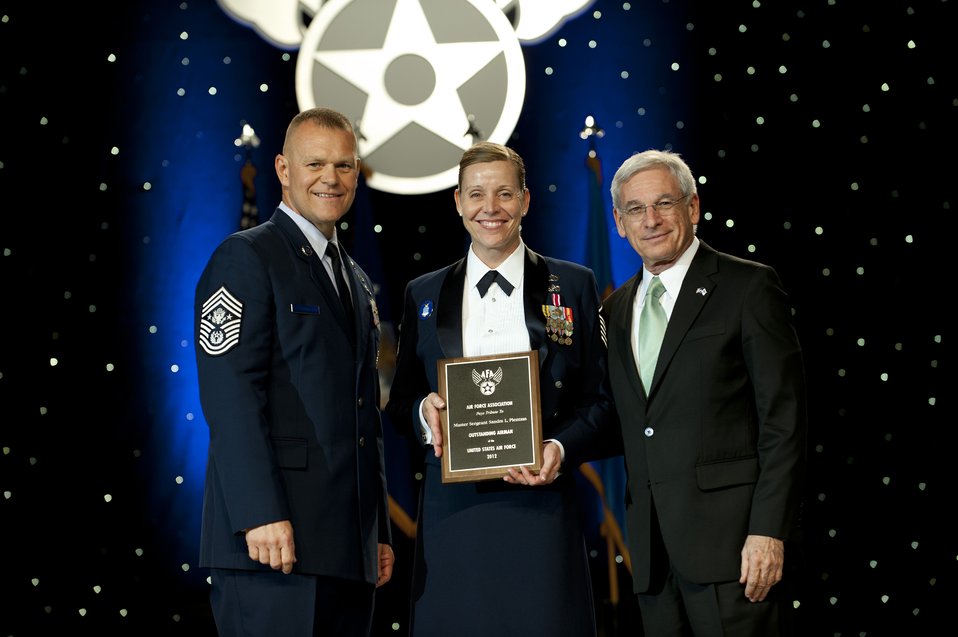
12 Outstanding Airmen of the Year

Chief Master Sgt. of the Air Force James Roy, left, and Sandy Schlitt, right, Air Force Association's chairman of the board, present a plaque to Master Sgt. Sandra Plentzas during the 12 Outstanding Airmen of the Year reception and awards dinner in Washington, D.C., Sept. 17, 2012. The recipients were recognized for superior leadership, job performance, community involvement and personal achievements. Plentzas is with the 944th Fighter Wing from Luke Air Force Base, Ariz.